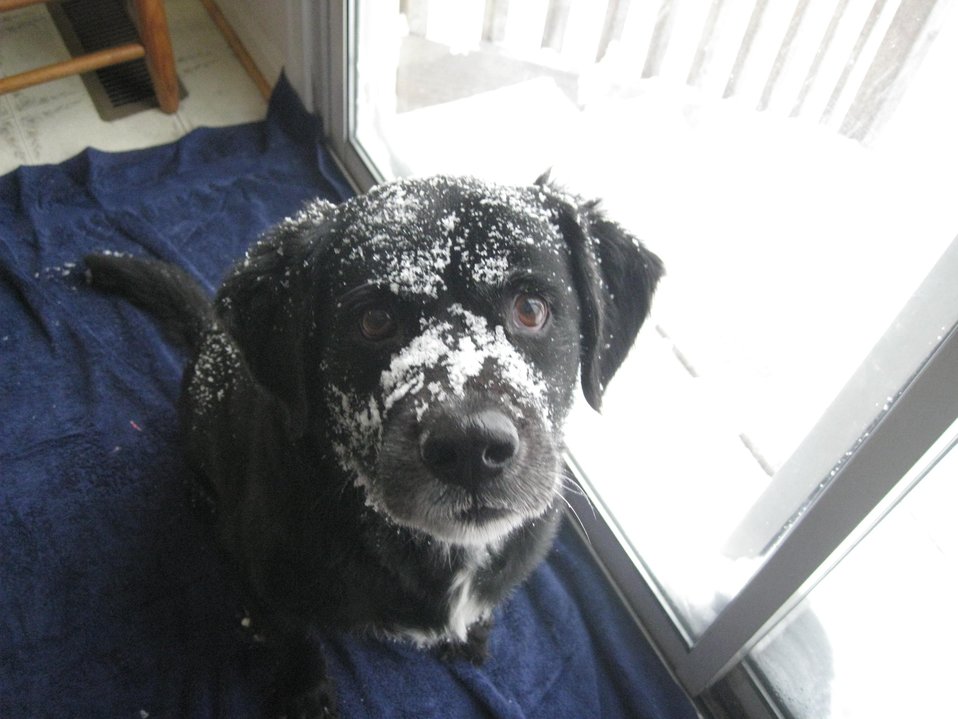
Back inside dog waits for a little treat to cheer him up following a foray into the snow during the blizzard of February 9-10 2010. See images wea03811 and wea03812.